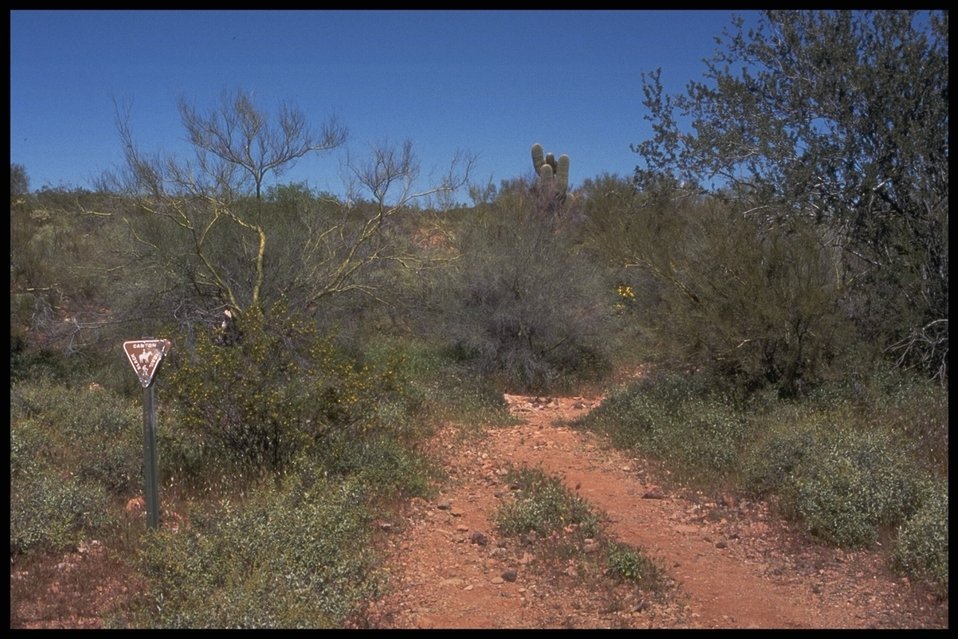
Three hundred miles of developed trails await recreationists visiting Arizona's public lands, this one lies in in the Black Canyon Trail